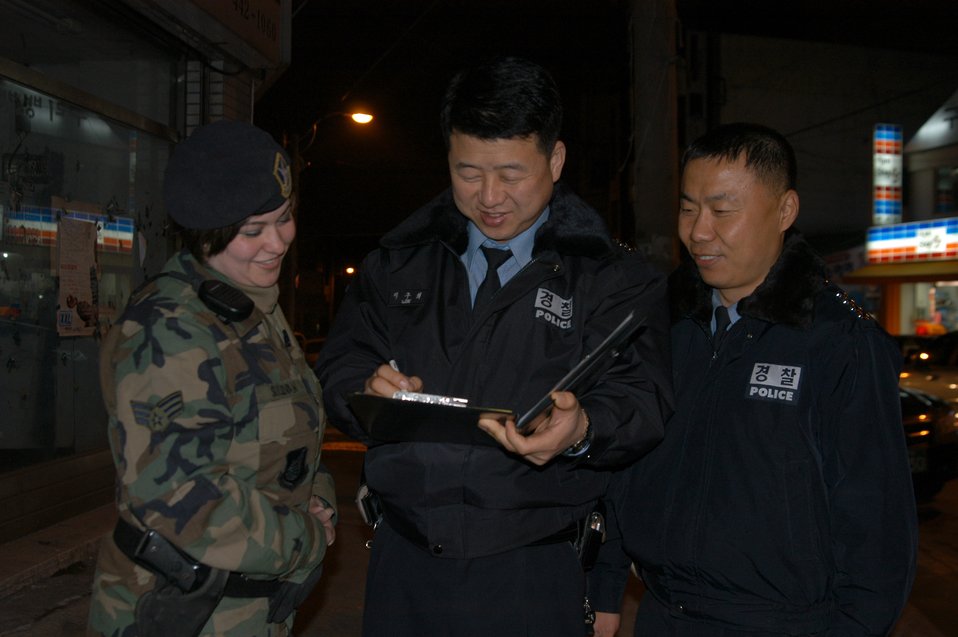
Airmen keep Kunsan safe

KUNSAN CITY, South Korea (AFPN) -- Senior Airman Shannon Sullivan, 8th Security Forces Squadron Town Patrol member, reviews police reports with Korean National Police Sergeants YI, Ku Hui (center) and YI, Kwon Tae. The 8th SFS, together with their KNP counterparts, now conduct patrols of downtown Kunsan City.